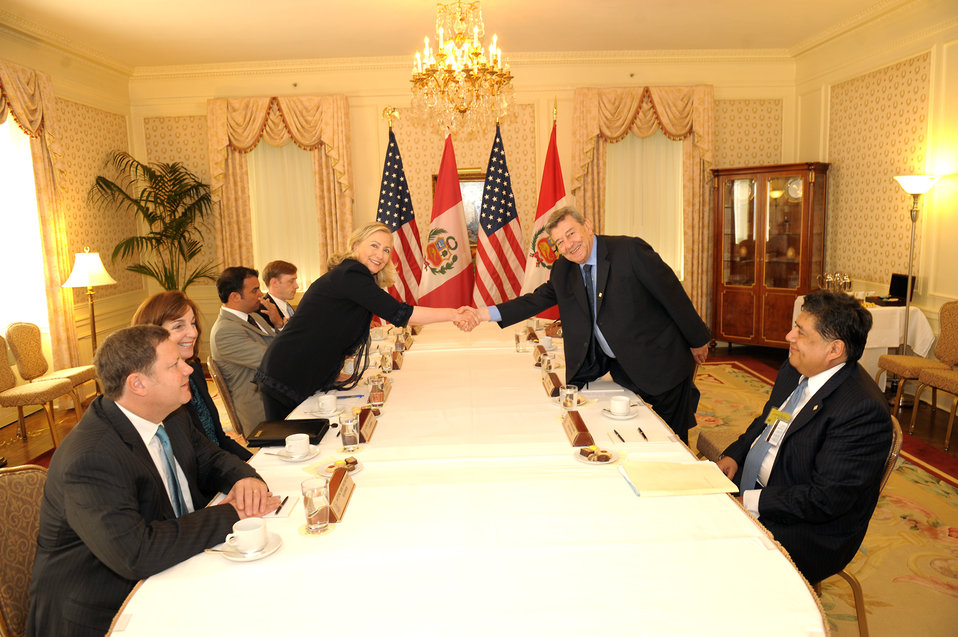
Secretary Clinton Meets With Peruvian Foreign Minister Roncagliolo

U.S. Secretary of State Hillary Rodham Clinton holds a bilateral meeting with Peruvian Foreign Minister Roncagliolo, at the Waldorf-Astoria Hotel in New York, New York, on September 22, 2011.